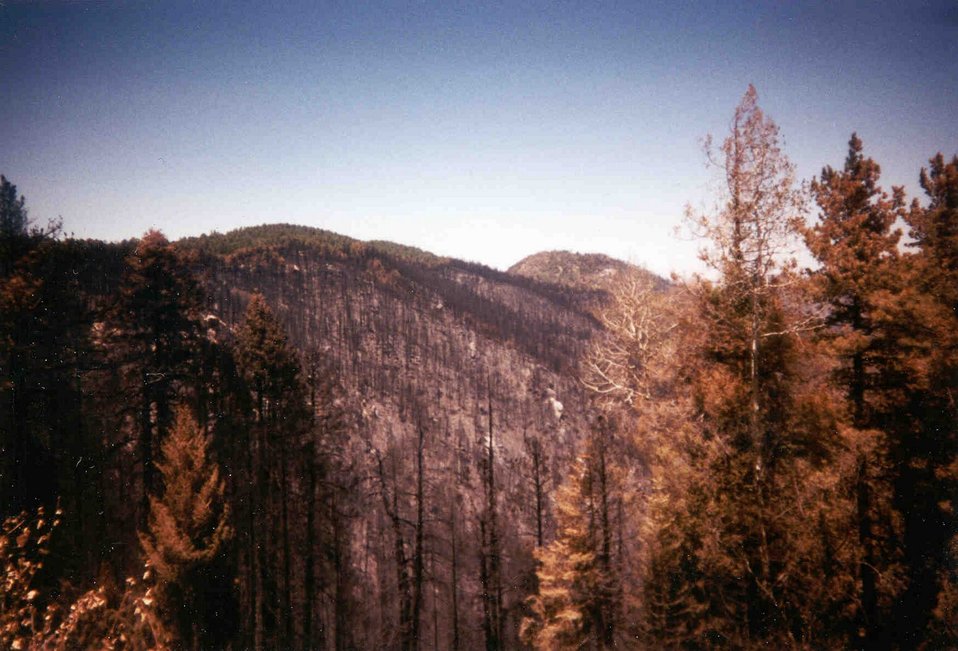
Aspen overlook on Mount Lemmon in the Coronado National Forest the first day of evacuee reentry following the Bullock Fire.